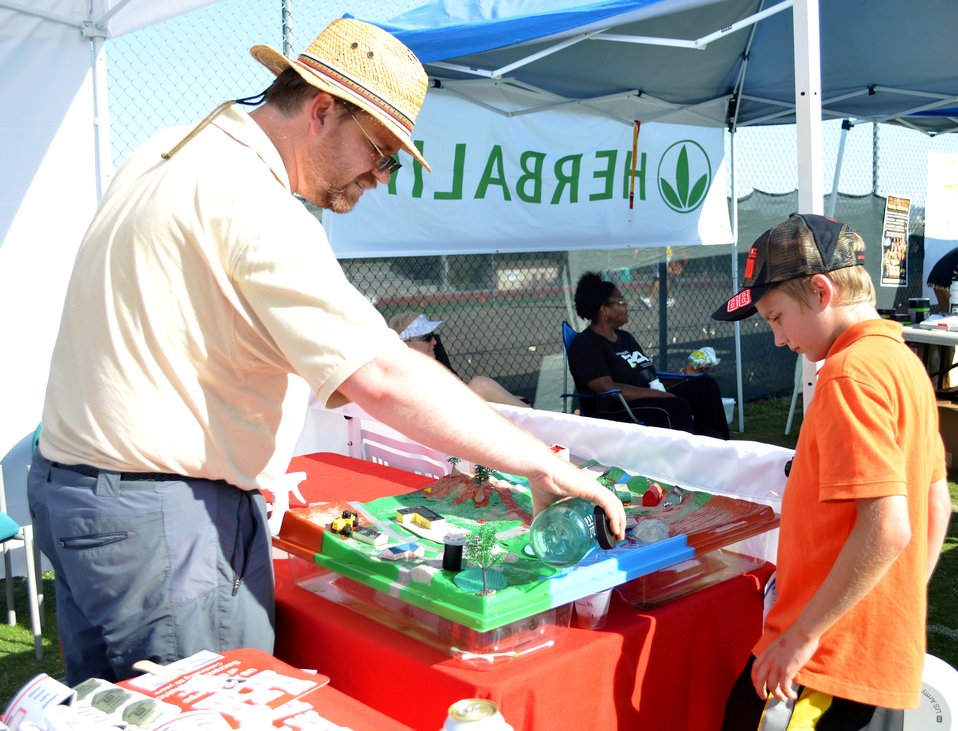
Wetlands filter water pollutants

U.S. Army Corps of Engineers Sacramento District project manager James Robb uses a watershed model to show how wetlands filter water pollutants during a Battle at the Capital event held Aug. 29 through Sep. 4, 2011. Robb staffed the Corps’ booth during the non-profit’s event to help raise awareness and enlist the public’s aid for severely wounded service members, through athletic competition.